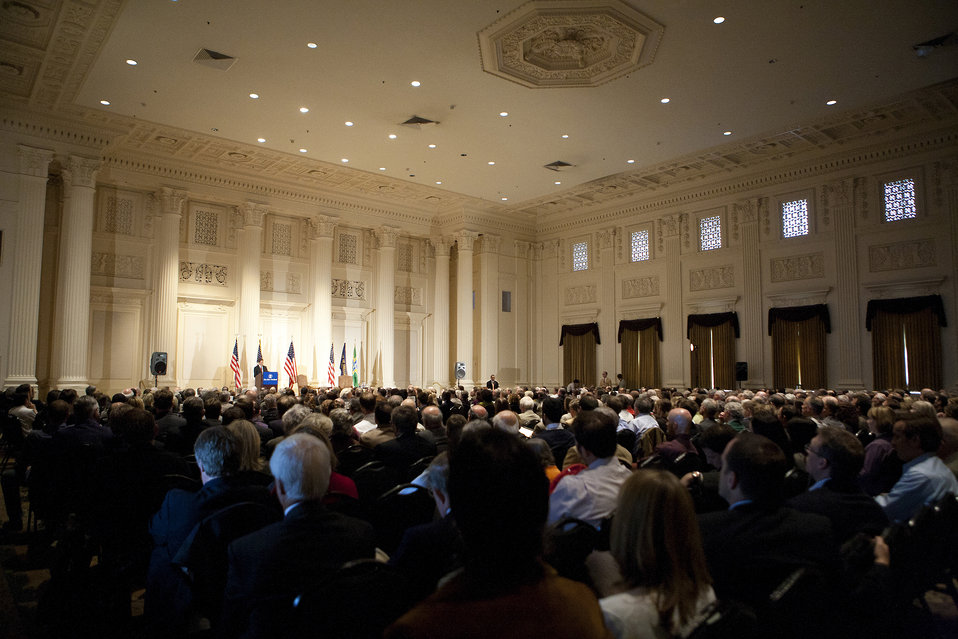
Secretary Geithner Speaks at the Portland City Club

The audience at Treasury Secretary Tim Geithner’s speech to the Portland City Club.